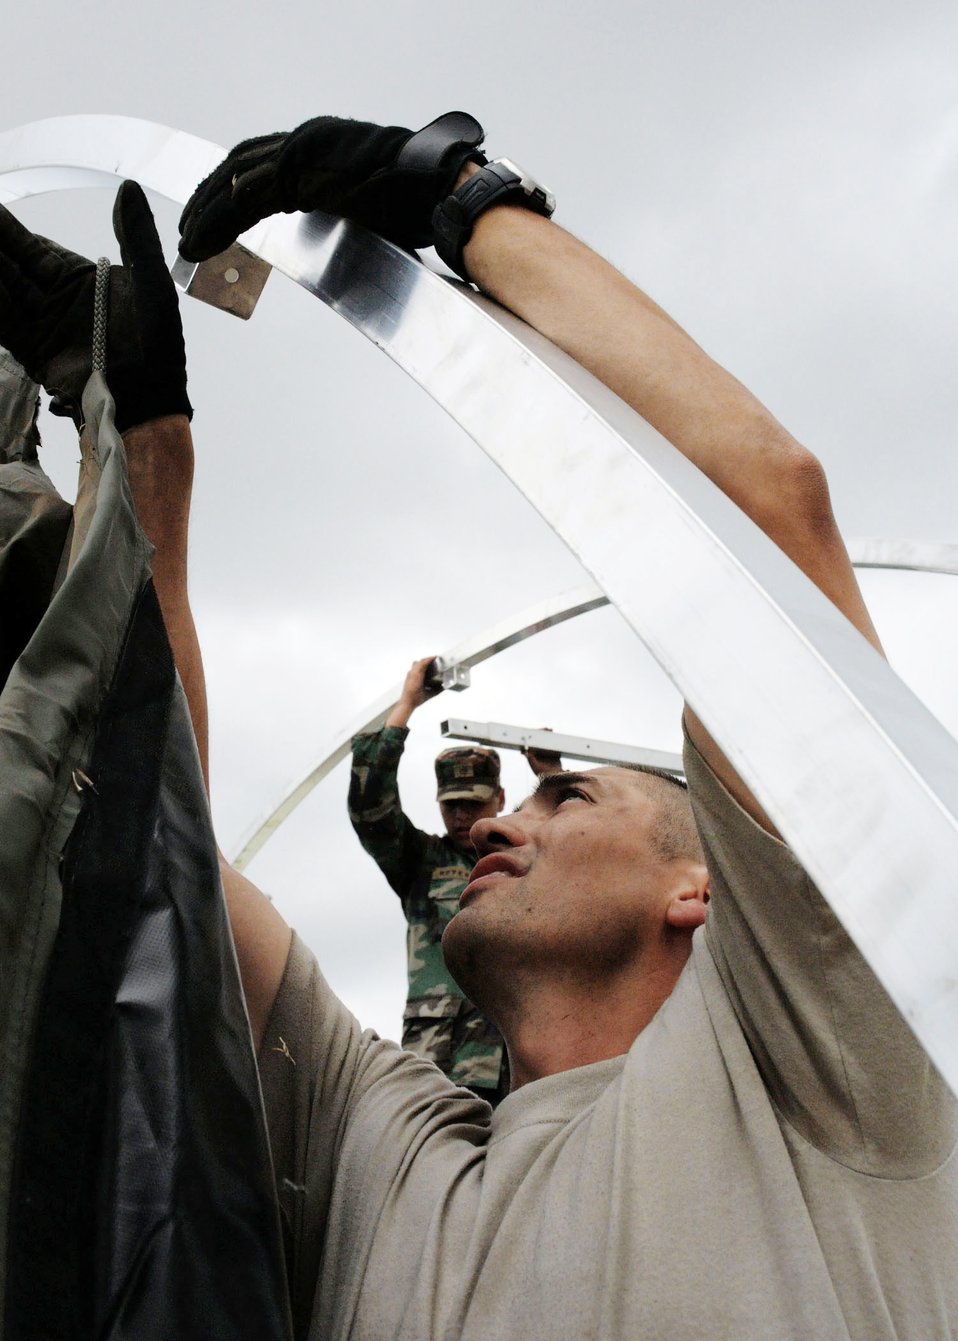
Airmen build EMEDs tents

Master Sgt. Joel Shepherd attaches fabric to a shelter frame that will be part of an expeditionary medical support hospital March 23, 2010, in Angol, Chile. Airmen from an Air Force Expeditionary Medical Support team along with members of the Chilean army built 13 shelters that will make up the hospital. The hospital will serve as a temporary facility for up to three years until a new hospital can be built in Angol. Sergeant Shepherd is the first sergeant of the EMEDs team, and deployed from Keesler Air Force Base, Miss.